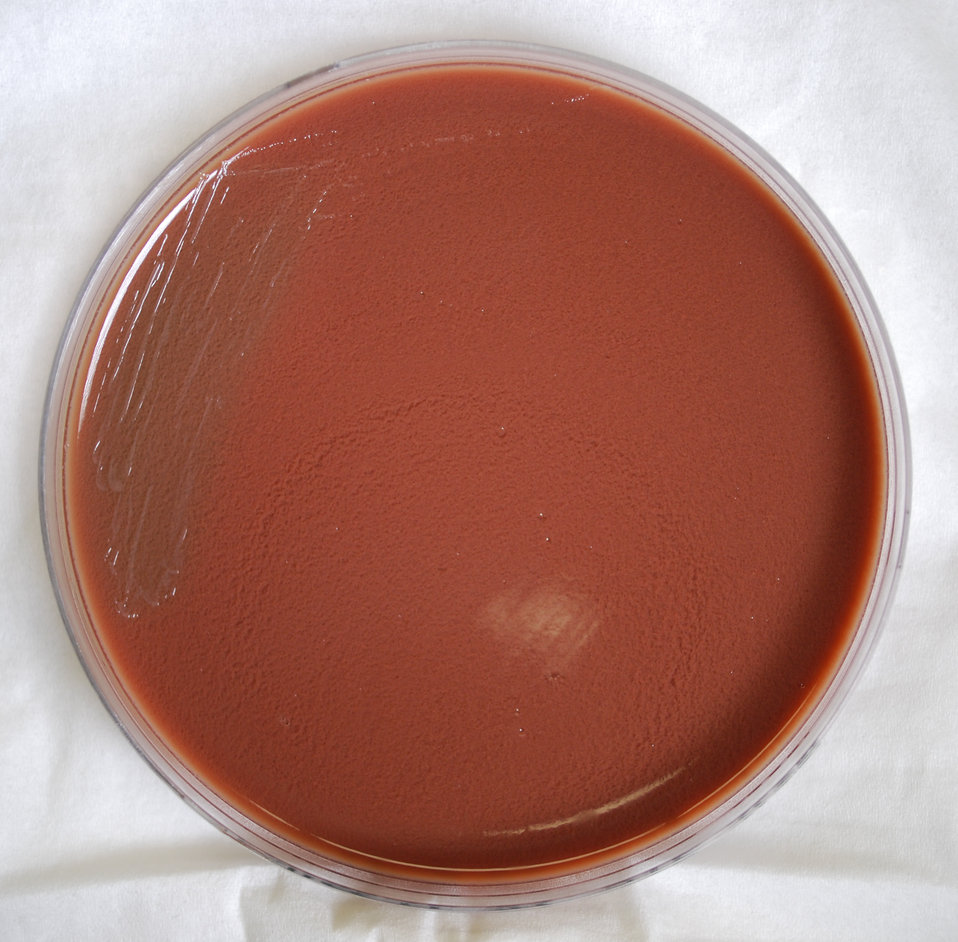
This photograph depicts the colonial morphology displayed by Gram-negative Yersinia pestis bacteria, which was grown on a medium of chocolate agar, for a 24 hour time period, at a temperature of 37�C. For a closer view of these bacterial colonies, see PHIL 12210.